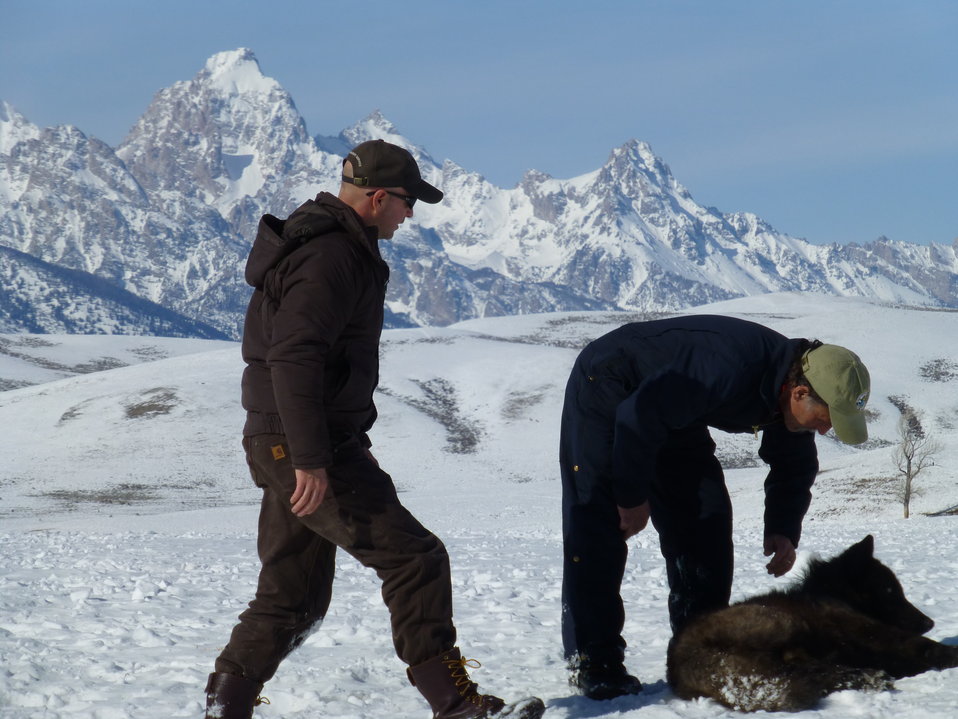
A Quieter Location

Eric Cole (left) and Mike Jimenez (right) moved a black wolf away from the work area to a quieter location in order to facilitate the wolf's recovery from the immobilization drug.

Credit: USFWS / Tim Pratt, biology volunteer